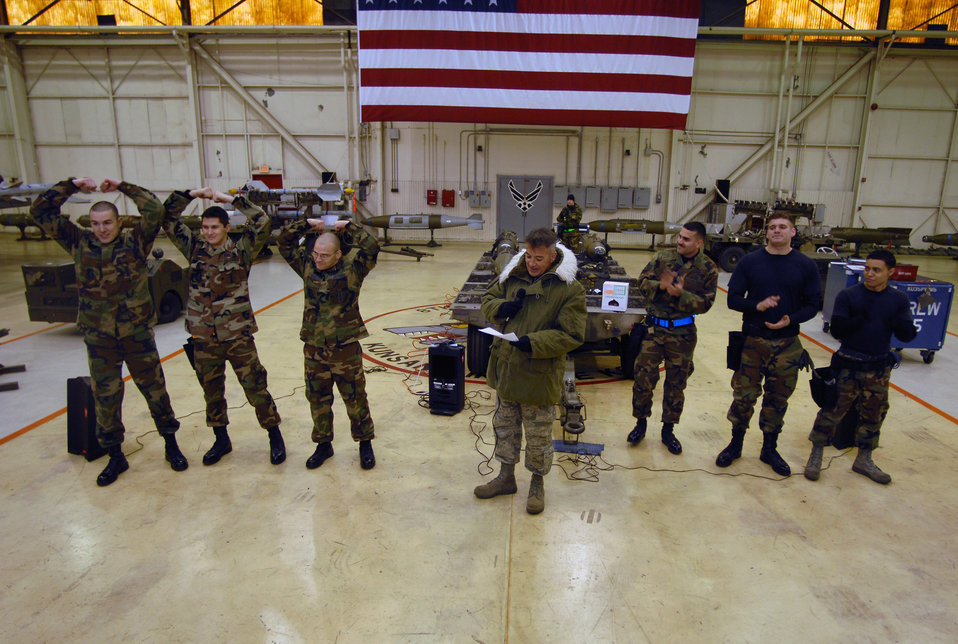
Heavy metal

Chief Master Sgt. William McElligott pronounces the 80th Fighter Squadron winner's of the weapons load competition Dec. 14 at Kunsan Air Base, South Korea. This was the final weapon's load competition between the 80th and the 35th Fighter squadrons for 2007. Chief McElligott is the 8th Fighter Wing weapons manager.